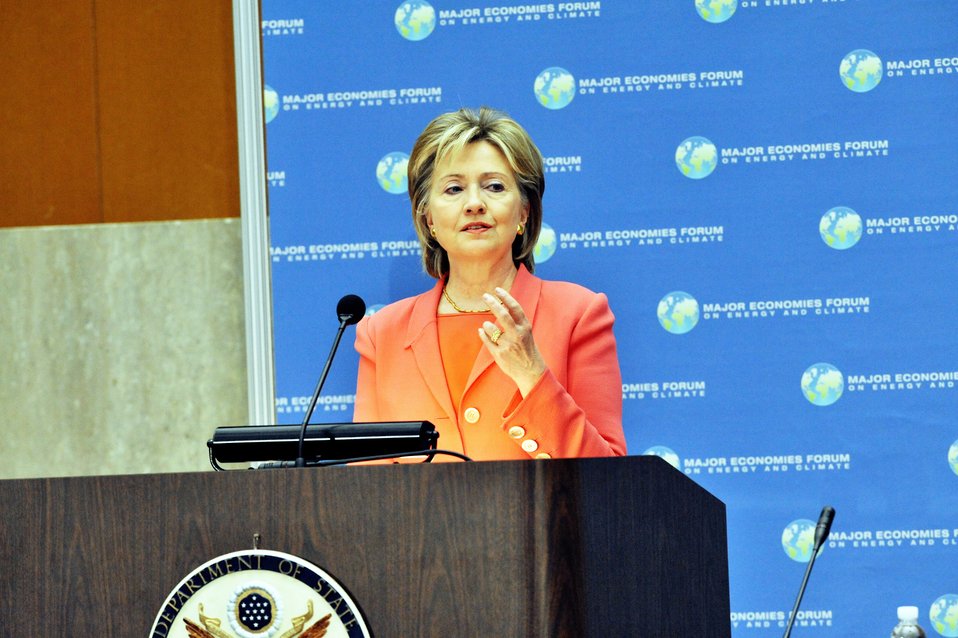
Major Economies Forum on Energy and Climate

U.S. Secretary of State Hillary Rodham Clinton provides opening remarks during the meeting of the Major Economies Forum on Energy and Climate in Washington, DC April 27, 2009.